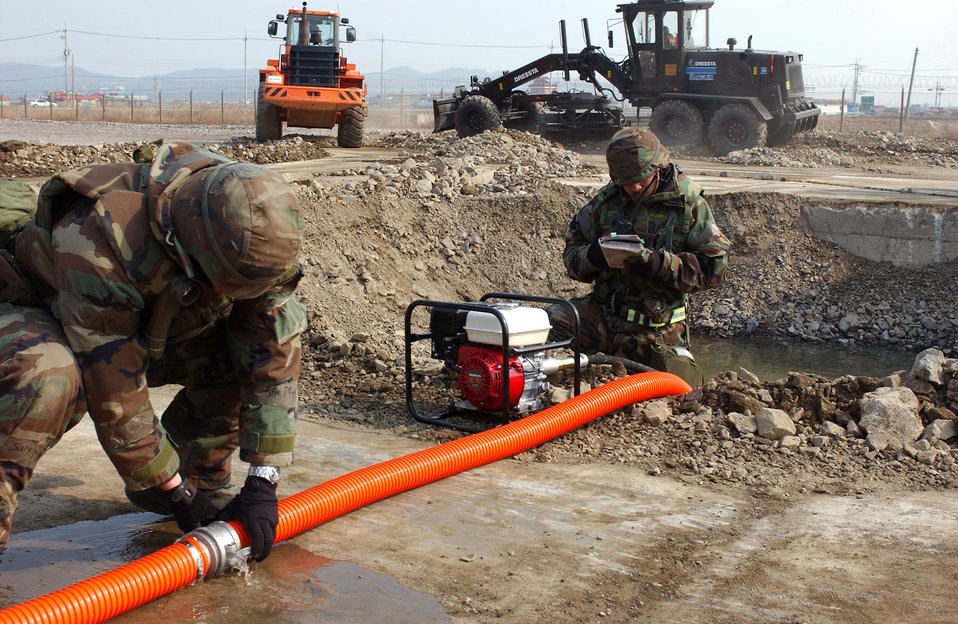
Keeping the runway in tip-top shape

Airmen from the 8th Civil Engineer Squadron airfield damage repair team prepare a crater for repair Feb. 21. during an operational readiness exercise at Kunsan Air Base, Korea. ADR teams do everything from crater repair to airfield lighting making it possible to get aircraft back in the air quickly.